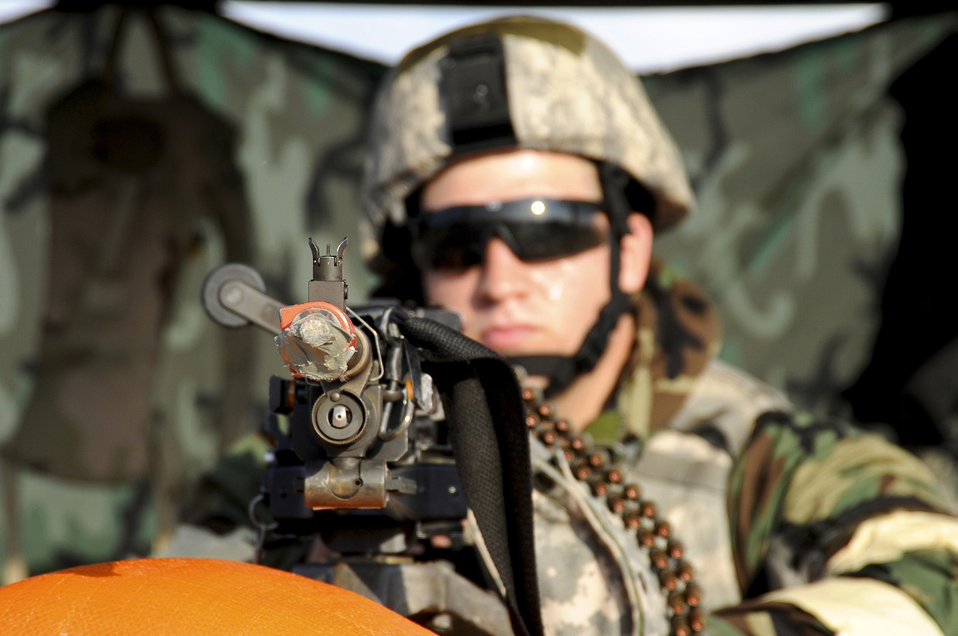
Homeland defense exercise

Senior Airman Robert Amburgey provides watch over the main gate at the Gulfport Combat Readiness Training Center during an operational readiness inspection May 20, 2010, in Gulfport, Miss. Airman Amburgey is with the 123rd Airlift Wing's security forces squadron.